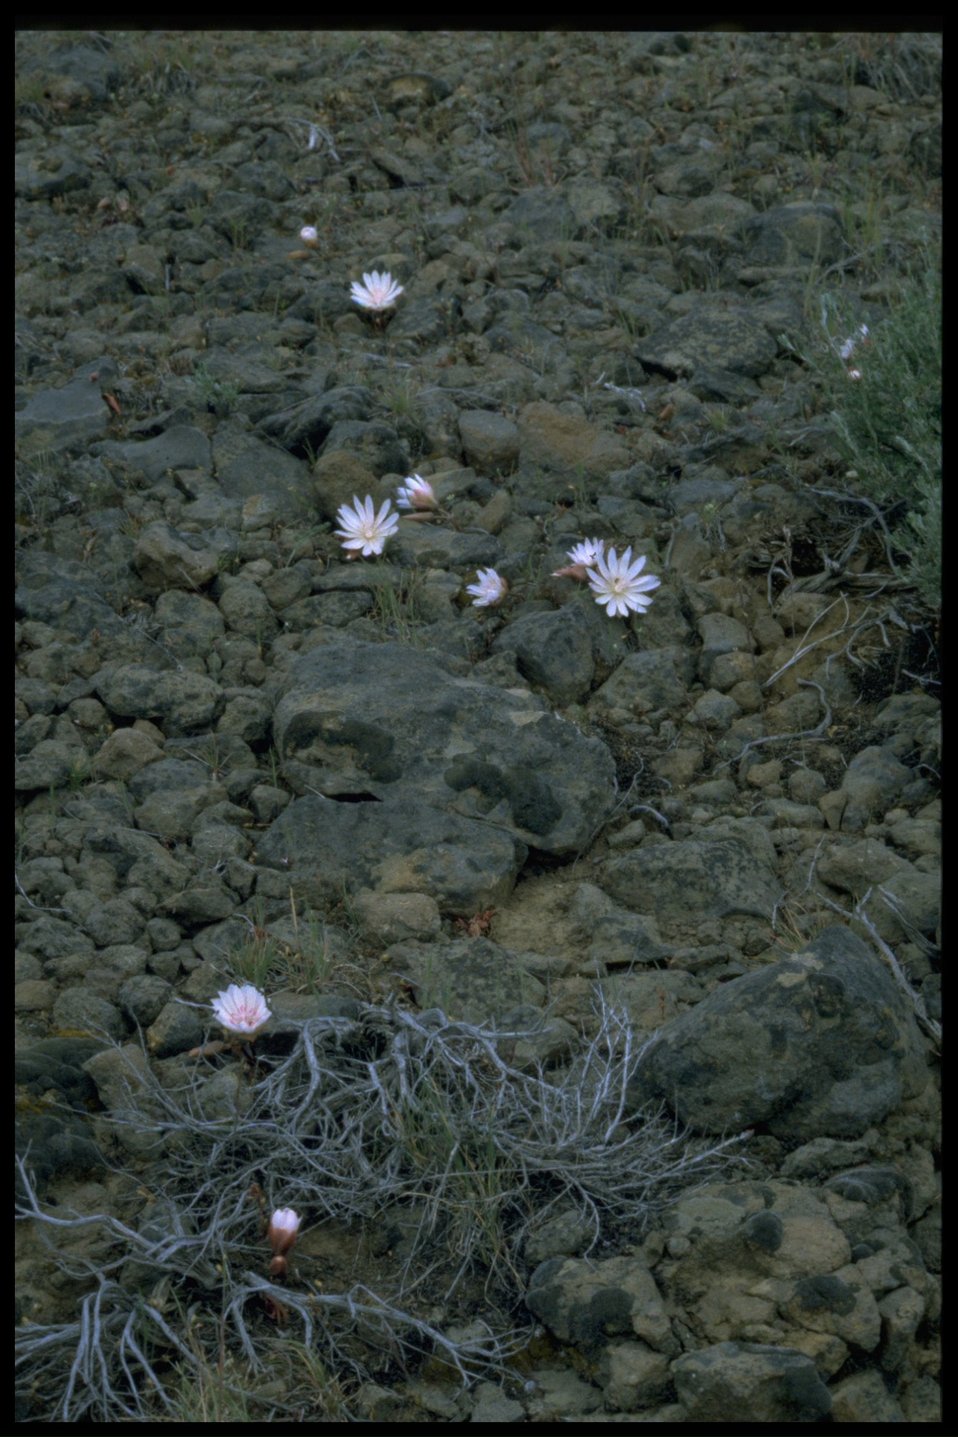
Farshot of bitter root (Lewisia rediviva).